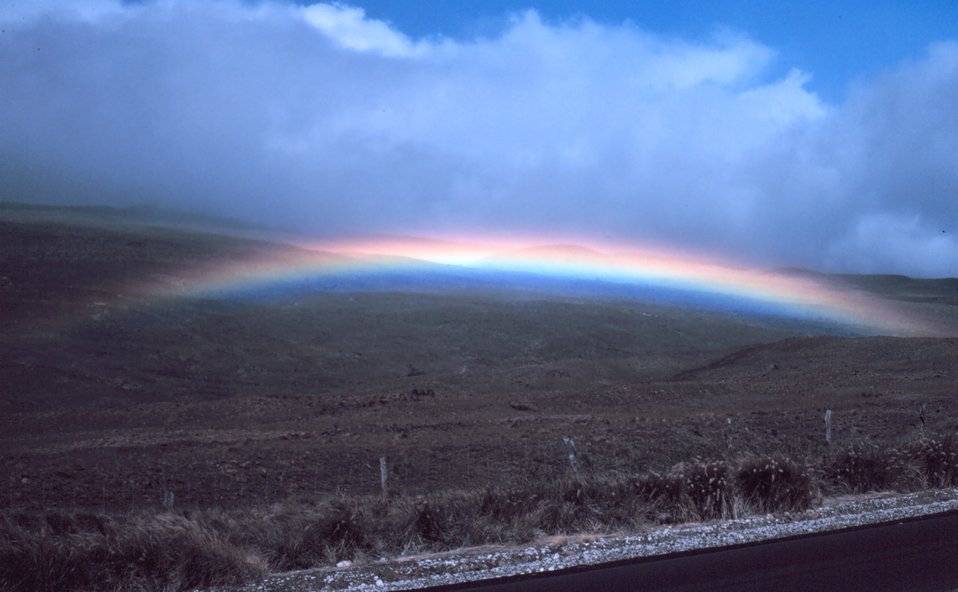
A brilliant Hawaiian rainbow